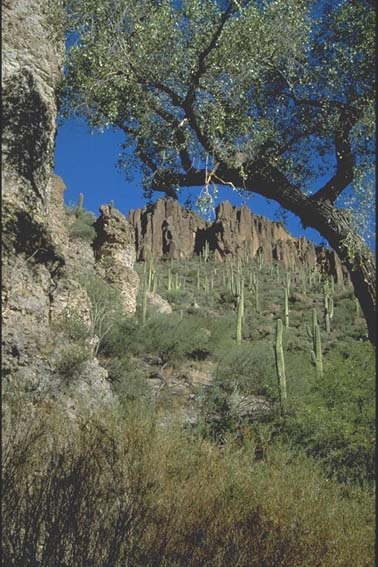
A cottonwood arches over a scene of saguaros marching up a wall near Old Deer Creek.